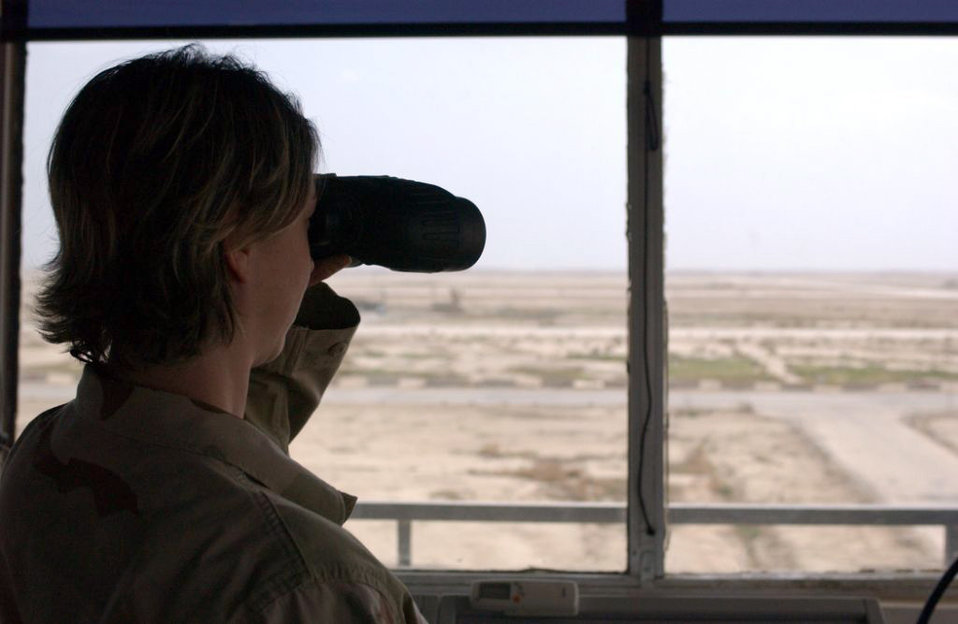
Controllers handle one-third of Iraqi airspace

Staff Sgt. Nichole Heise, an air traffic controller at the control tower at Ali Base, Iraq, tracks a departing aircraft. Sergeant Heise is deployed to the 407th Expeditionary Operations Support Squadron from Beale Air Force Base, Calif.